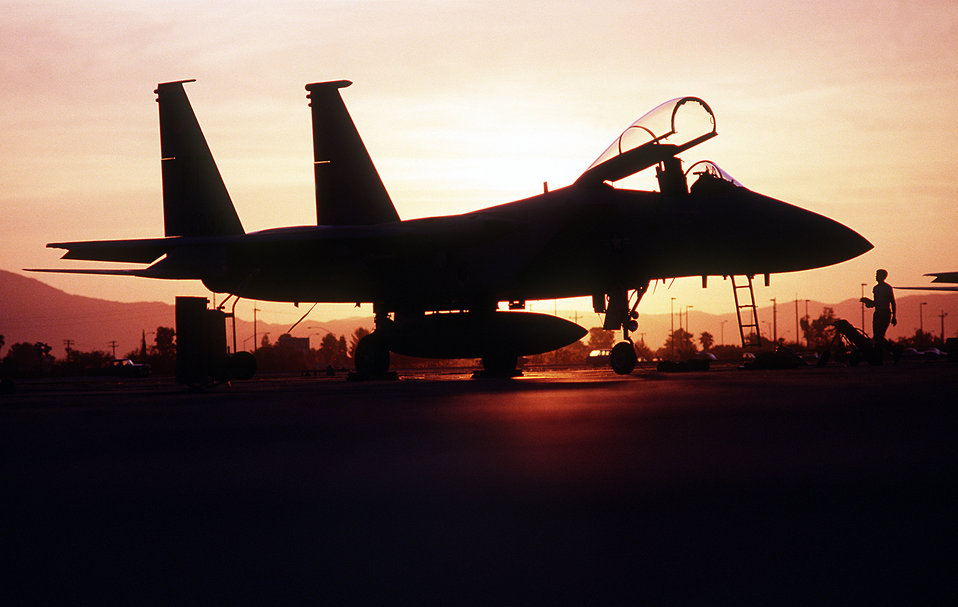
F-15C Eagle

1990's -- An F-15C Eagle aircraft of the 1st Tactical Fighter Wing is silhouetted against the sunrise while on a combat patrol near the Iraqi border during Operation Desert Shield.